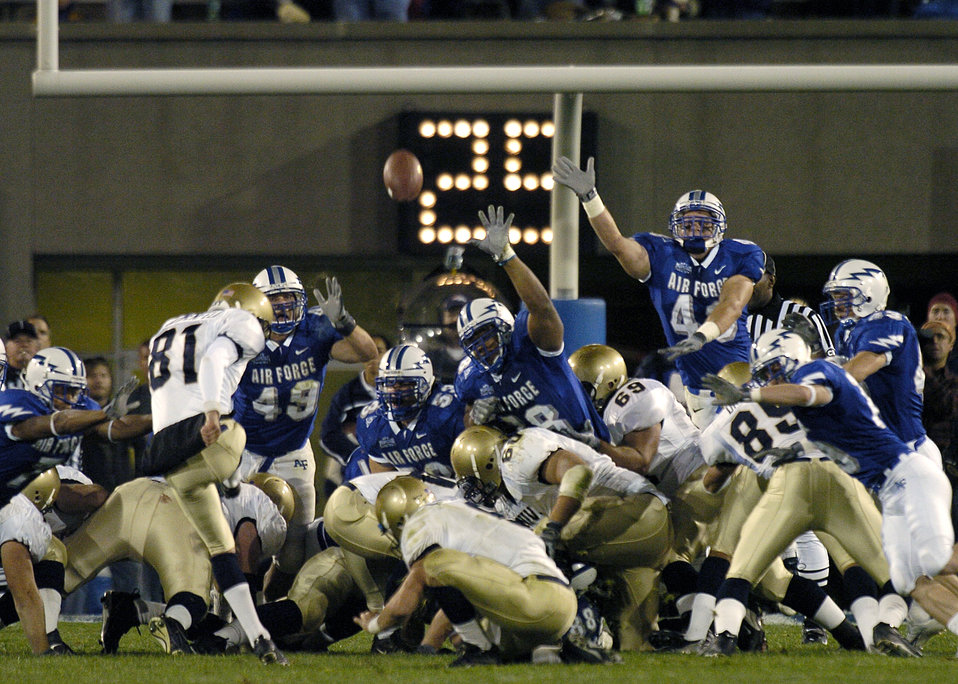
Navy boots AF out of trophy bid

U.S. AIR FORCE ACADEMY, Colo. -- Navy kicker Geoff Blumenfeld gives Air Force the boot kicking a field goal with four seconds left in the game here Sept. 30. The three-pointer gave the Midshipmen a 24-21 win over Air Force.